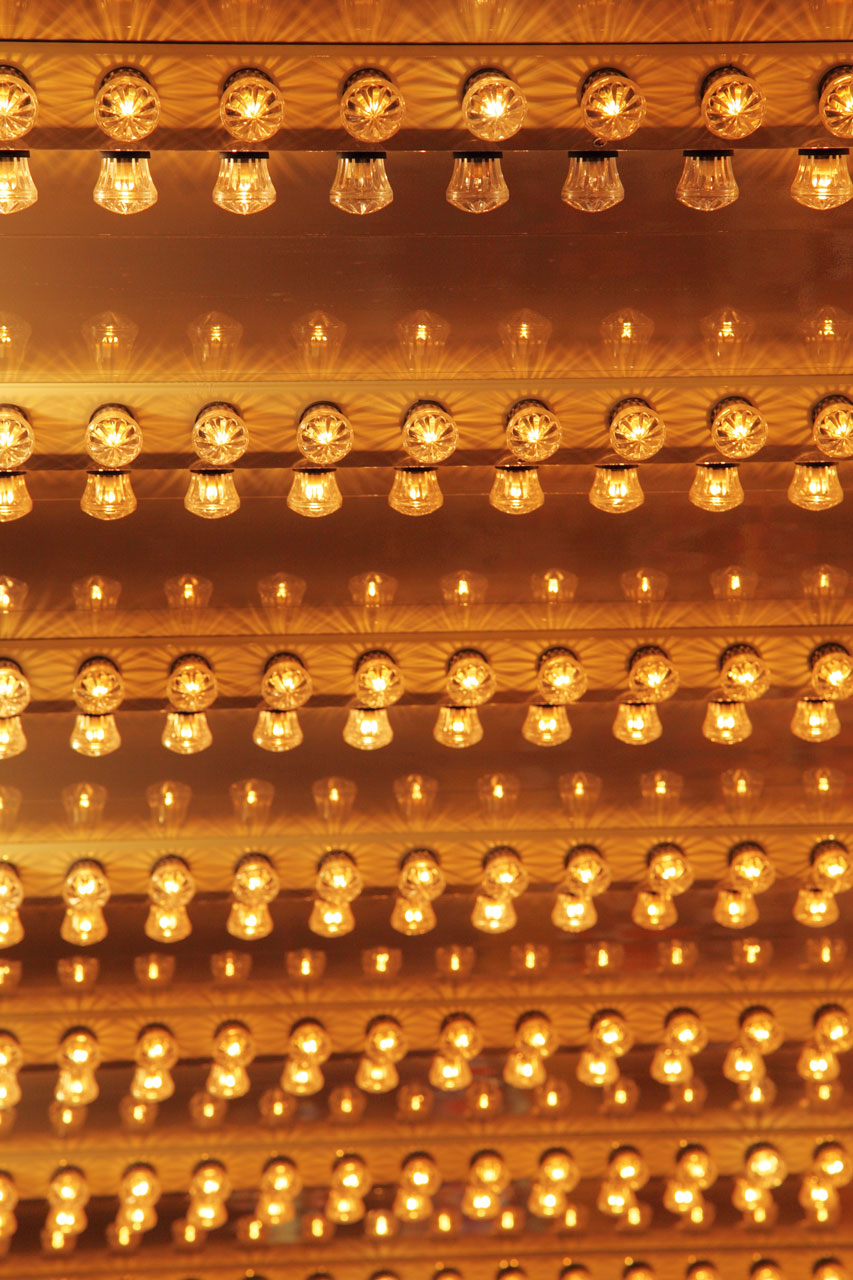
Many light bulbs

A lot of yellow shining light bulbs.